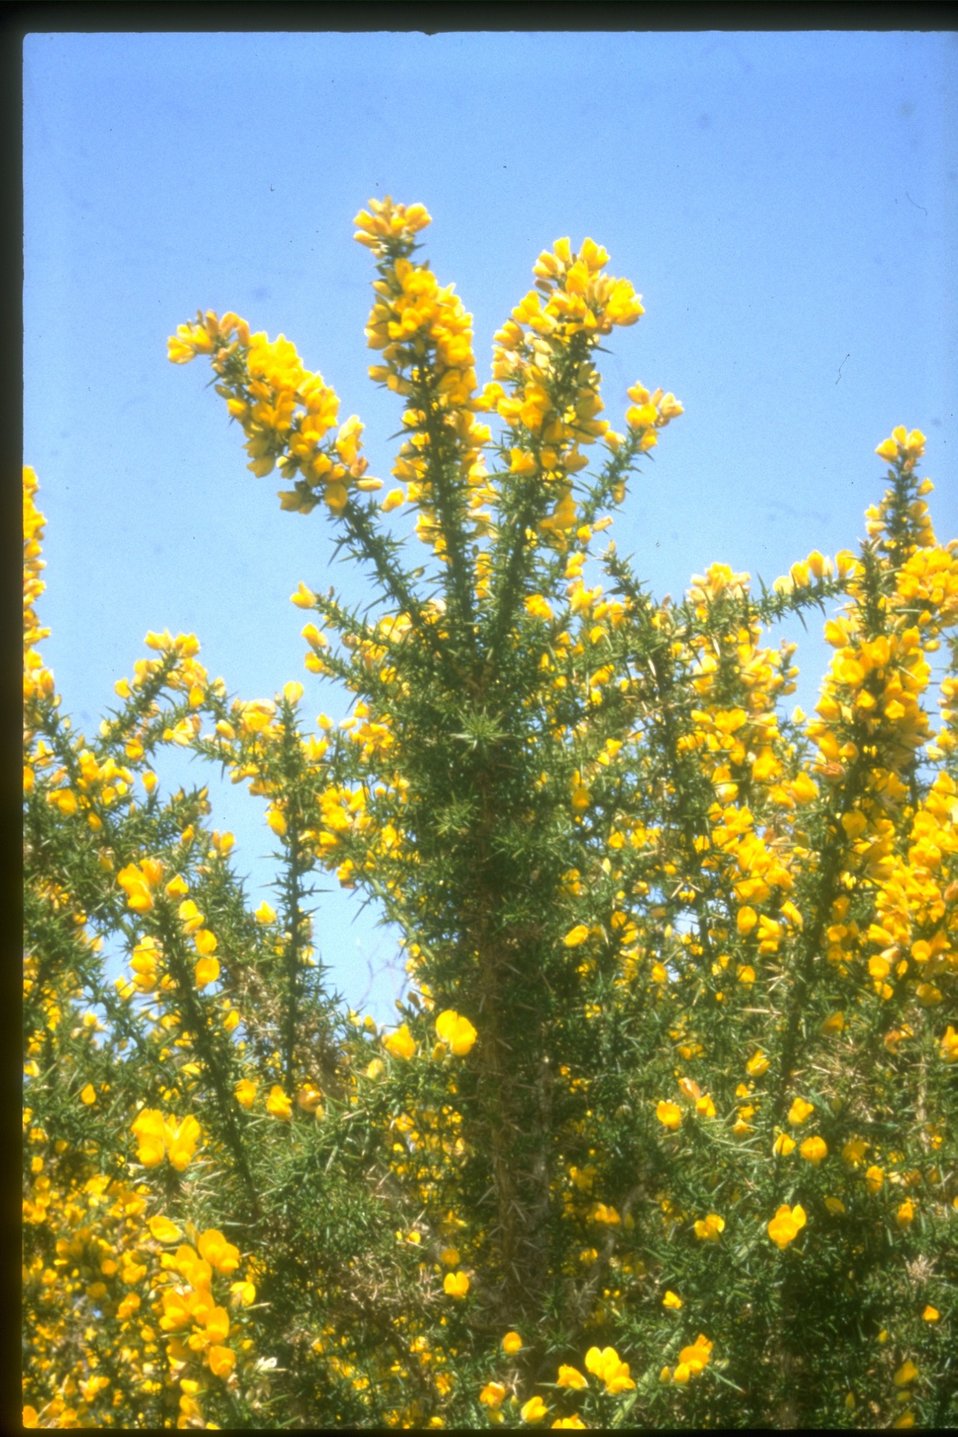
Gorse.